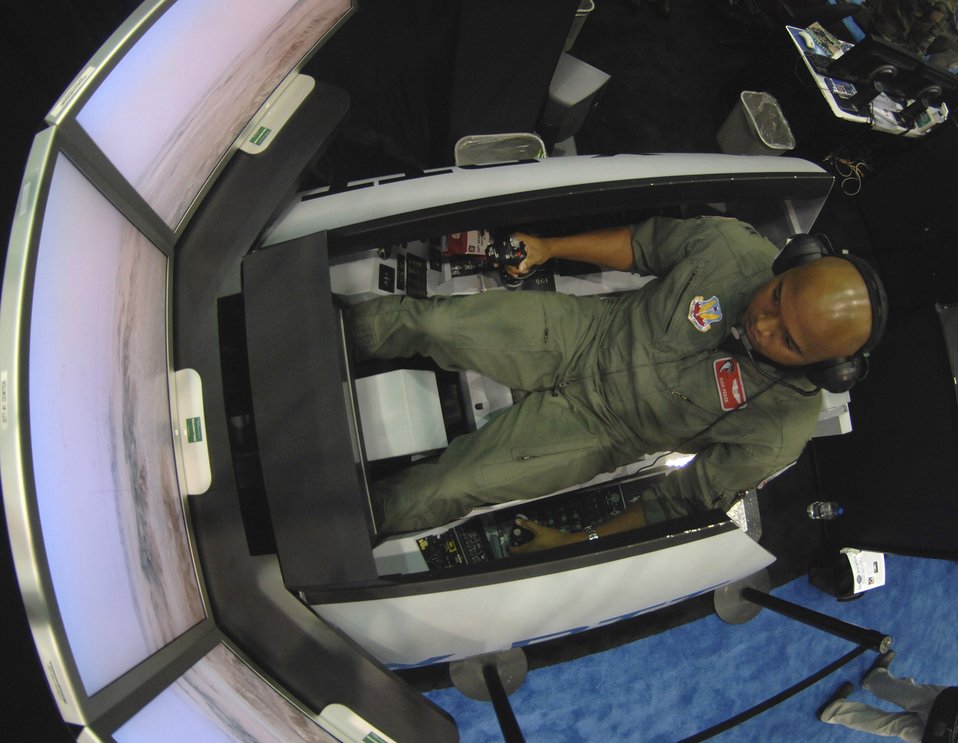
What a ride

Capt. Rich Peace